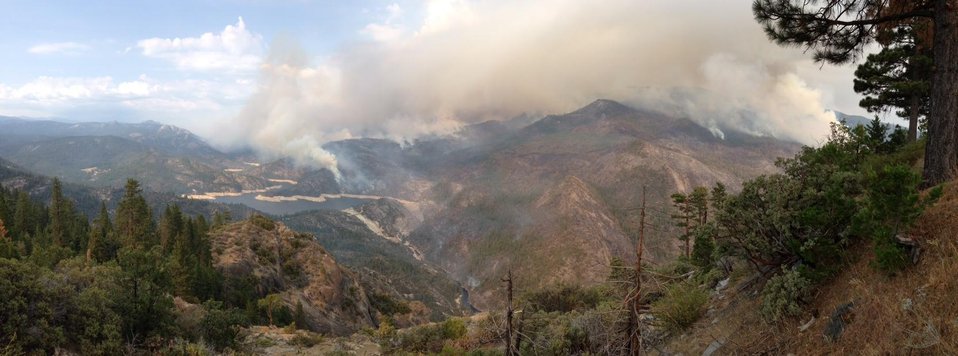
The Aspen Fire in the Sierra National Forest near Big Creek, CA began on Jul. 22, 2013 by lightning and has consumed approximately 1, 400 acres and is approximately 20% contained.